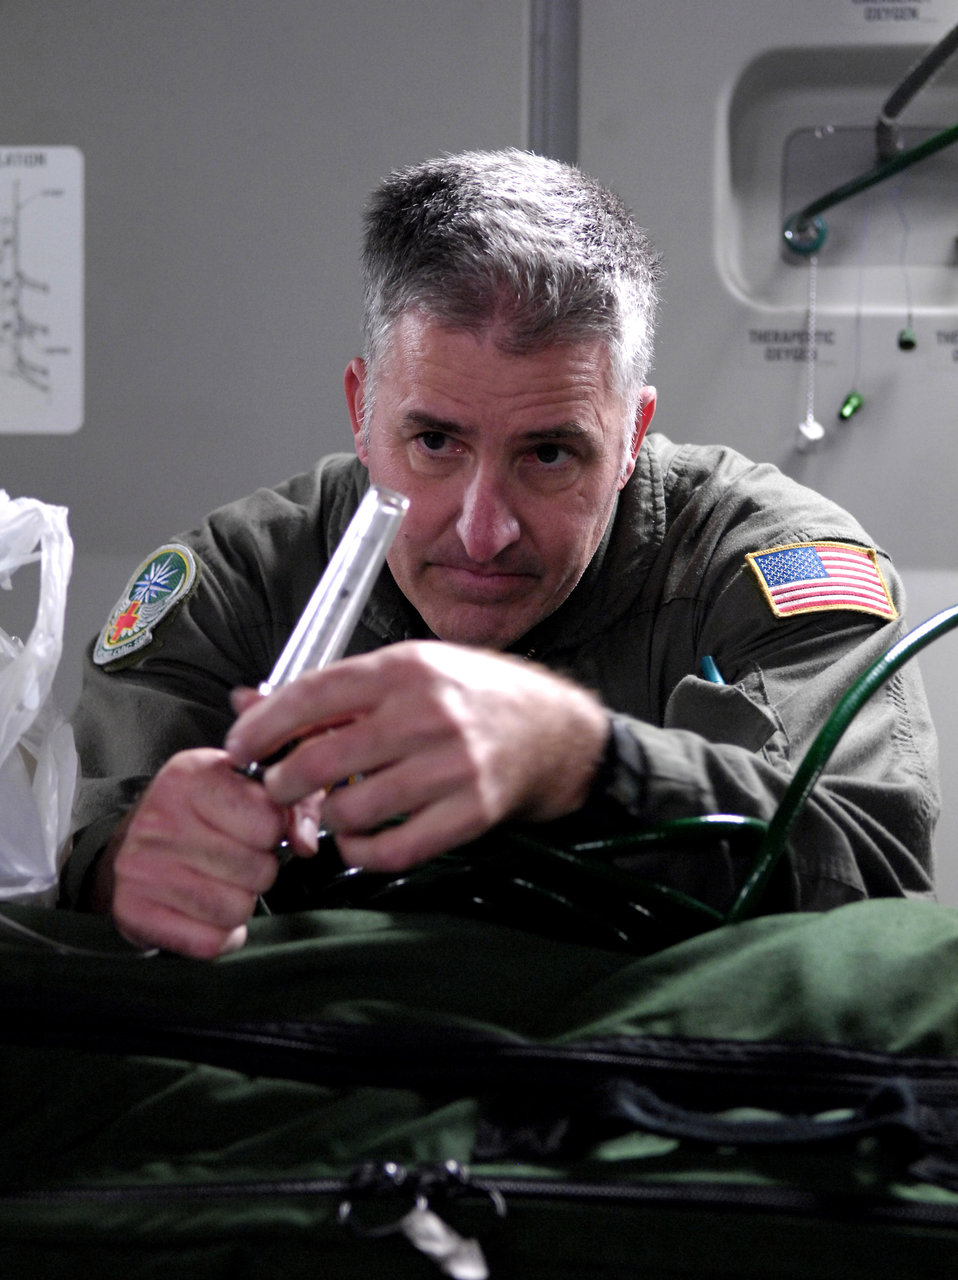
McChord C-17 crew flies medevac mission out of Antarctica

Master Sgt. Howard Halter functional checks medical equipment on a C-17 Globemaster III before taking off on a medical evacuation mission to Antarctic Aug. 28 from Christchurch, New Zealand. Sergeant Halter is assigned to the 446th Aeromedical Evacuation Squadron from McChord Air Force Base, Wash. The medical evacuation mission was flown for a patient who required more definitive medical treatment than can be handled in Antarctica.